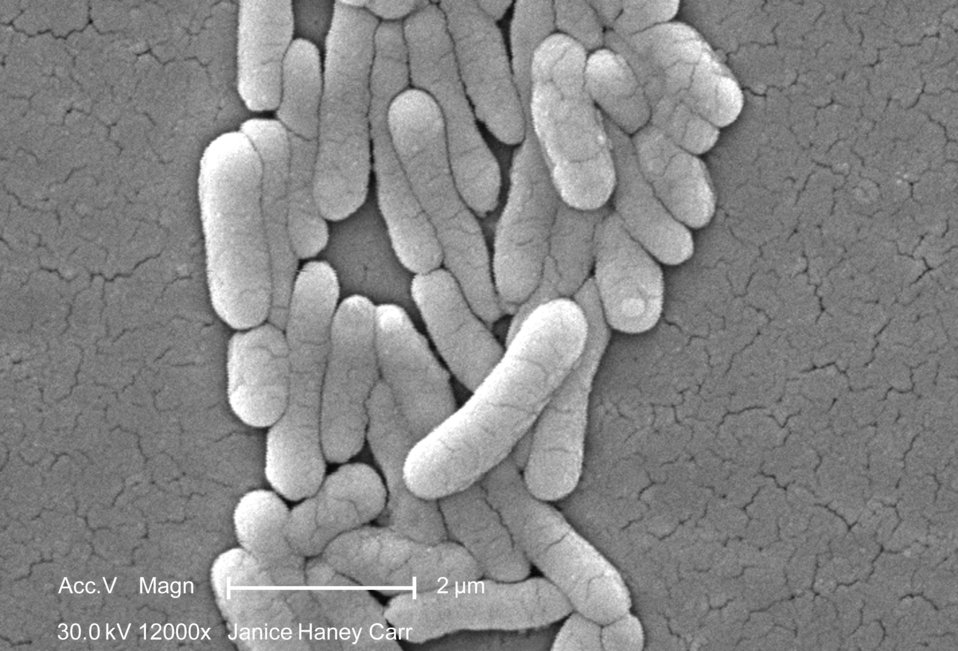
Under a high magnification of 12000X, this scanning electron micrograph (SEM) revealed the presence of numbers of clustered Gram-negative Salmonella typhimurium bacteria, which had been grown in a pure culture. See PHIL 10971 for a colorized version of this image.What sort of germ is Salmonella?